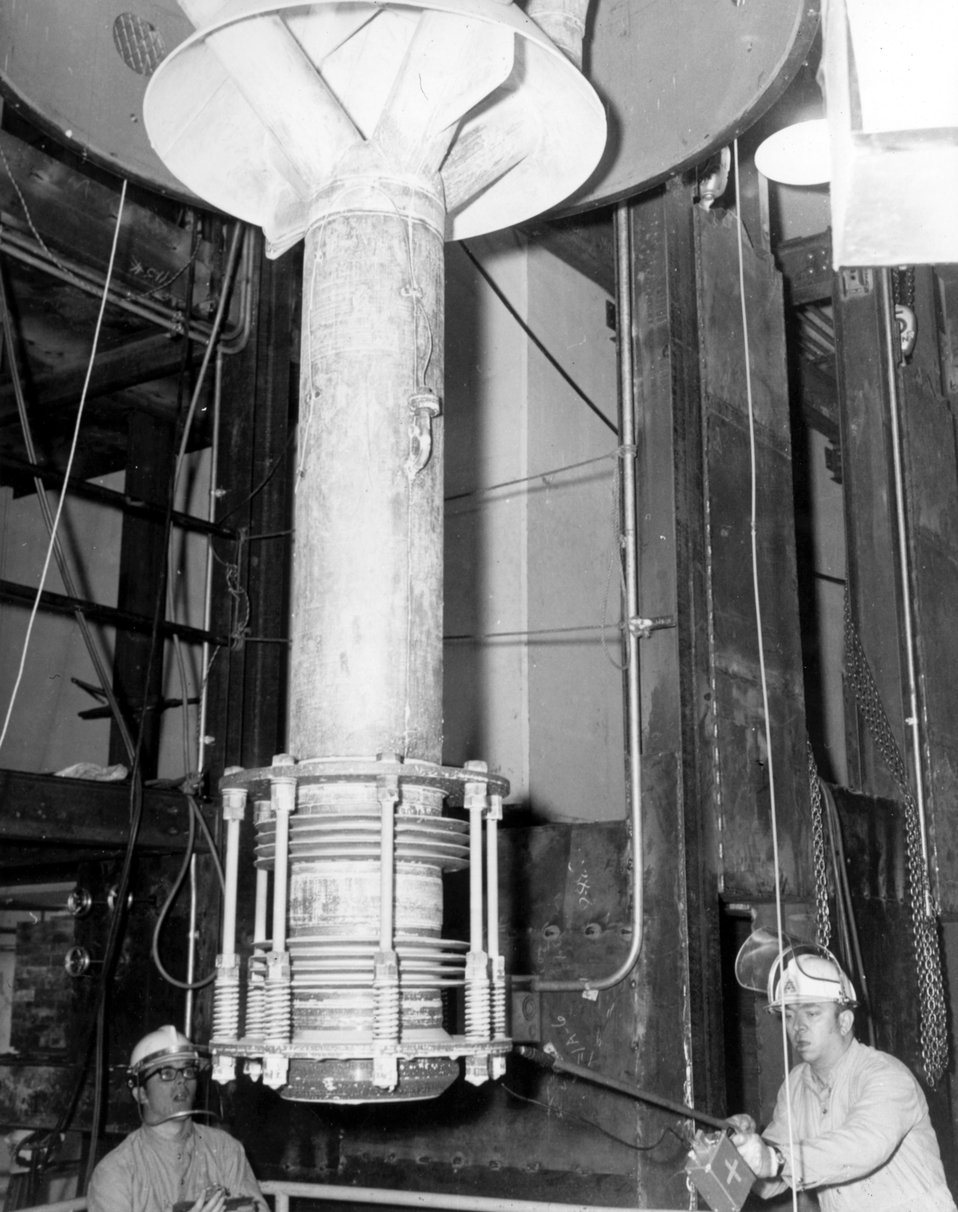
The lower part of the assembly emerging from a special silo designed by EBR-II engineers to receive such components from the sodium environment.
c.1972